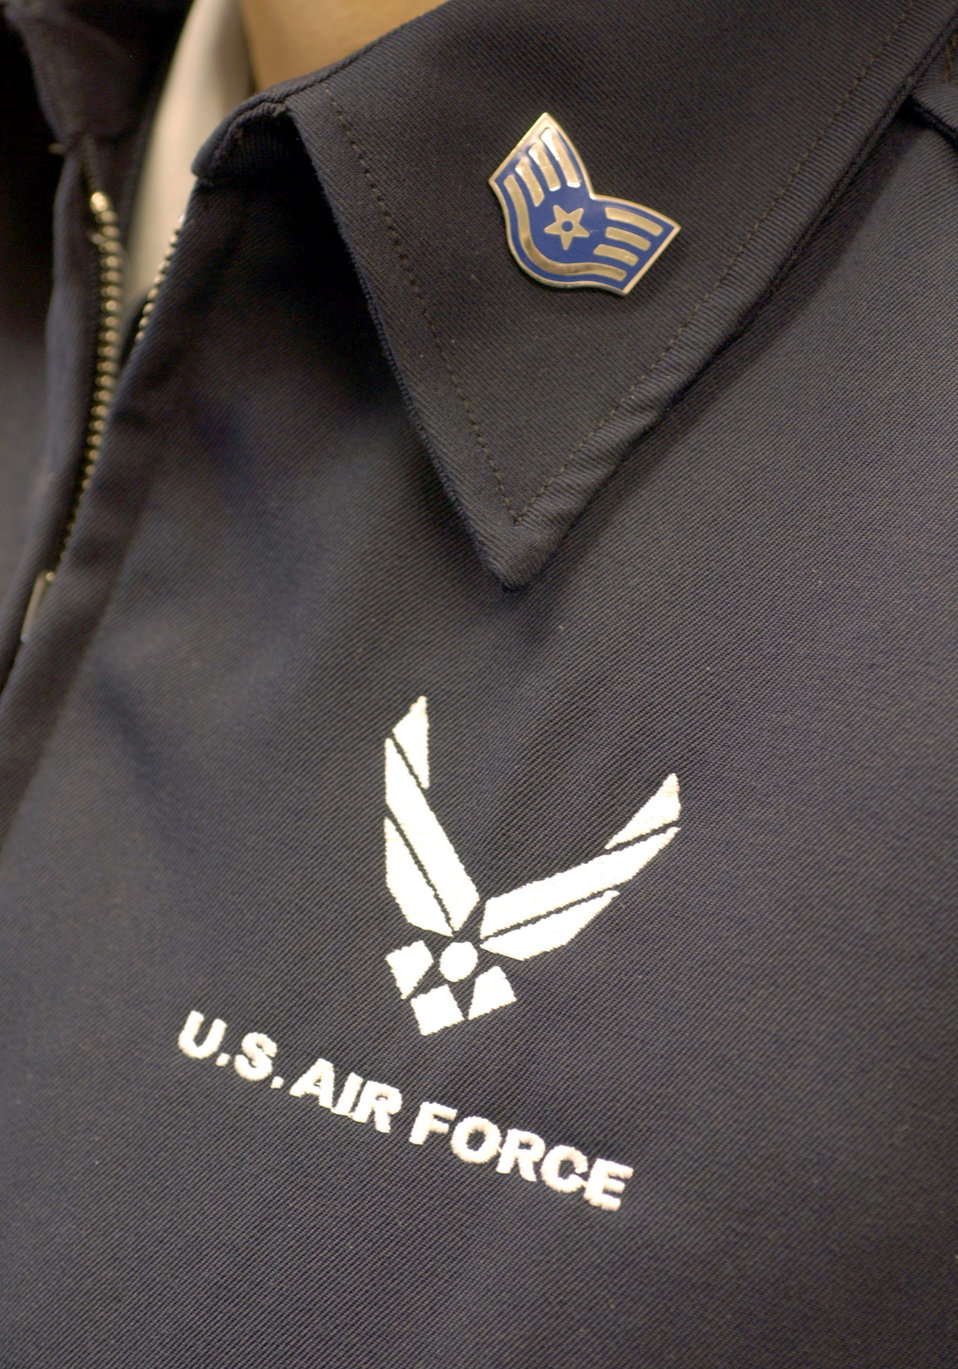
Logo authorized on jacket

WASHINGTON -- Air Force Uniform Board members have introduced embroidering the Air Force logo onto the lightweight blue jacket as an optional wear item. The new addition will undergo a wear-testing period at Maxwell Air Force Base, Ala. Airmen can have the addition added to their jackets at any time by visiting an embroidery shop.